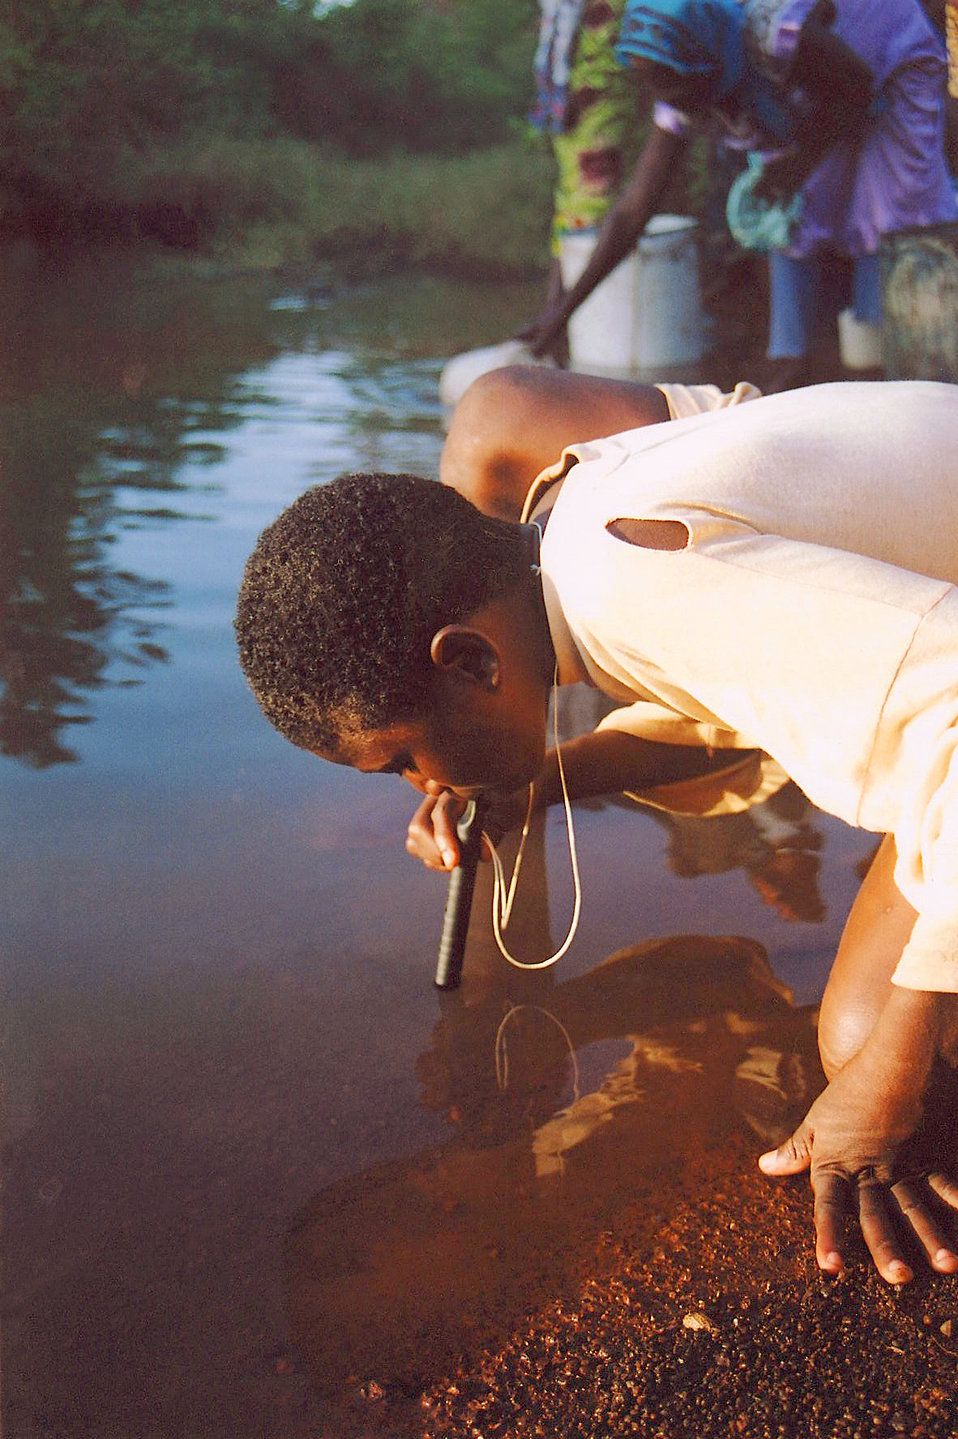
This 2003 image depicts a Ghanaian boy squatting at the edge of a dam, drinking water directly the local water source through a pipe filter. Similar to a straw, pipe filters are individual filtration devices, which allow people to filter their drinking water, in order to avoid contracting Guinea worm disease while traveling or working in the field. To prevent possible infection, all drinking water must be filtered in endemic areas to remove the microscopic copepods, or 'water fleas' that carry the infective Guinea worm larvae.